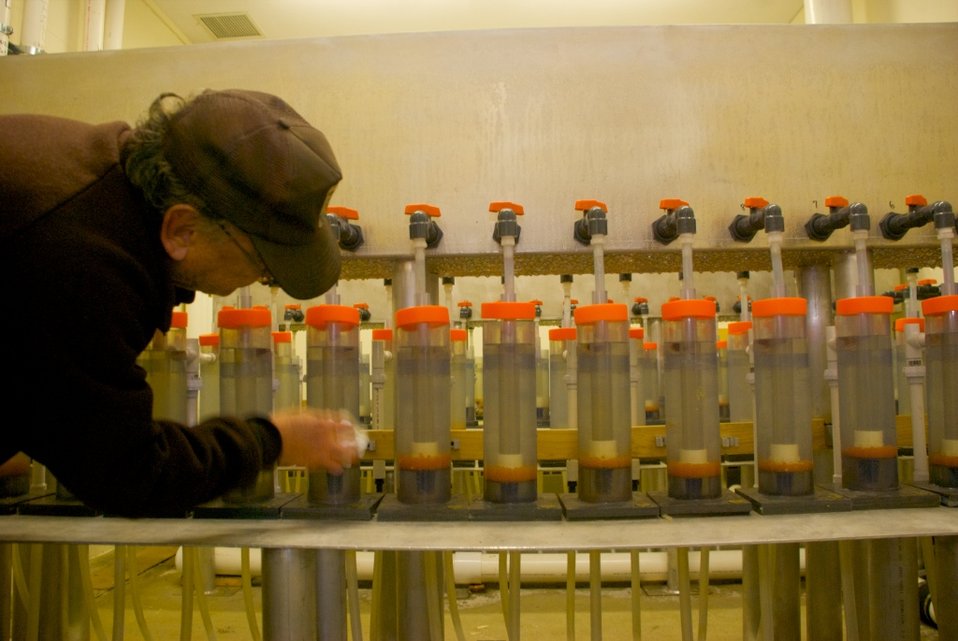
Richard Cronin National Salmon Station

National Salmon Station in Sunderland, MA.